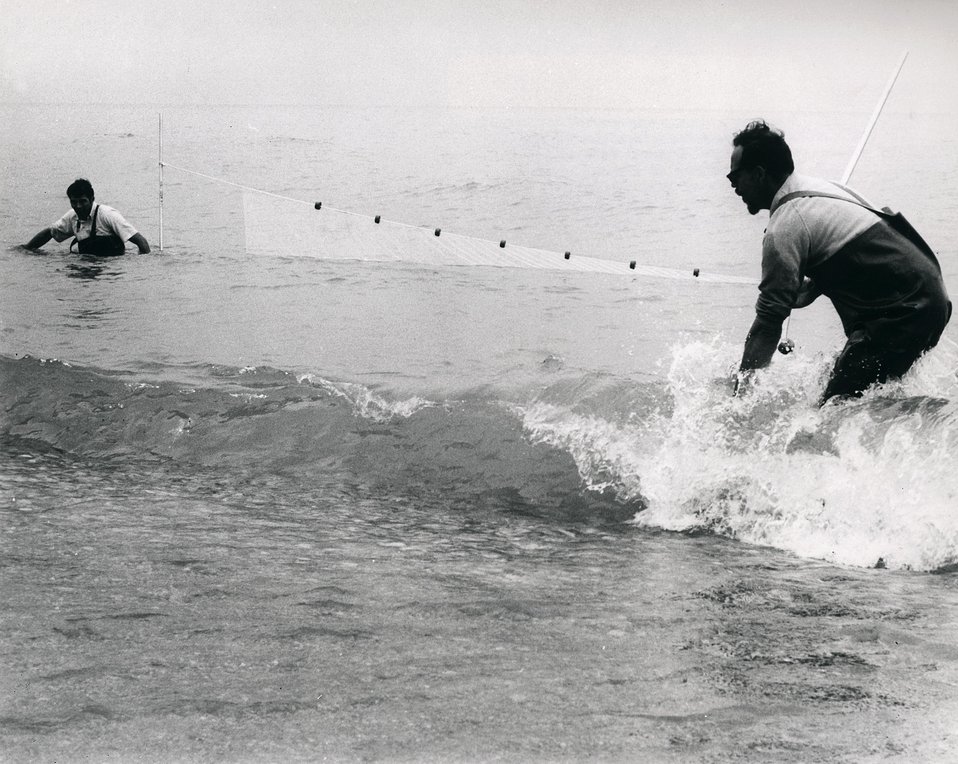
Researchers from the AEC's Argonne seine for fish in the vicinity or of the power plant on Lake Michigan.